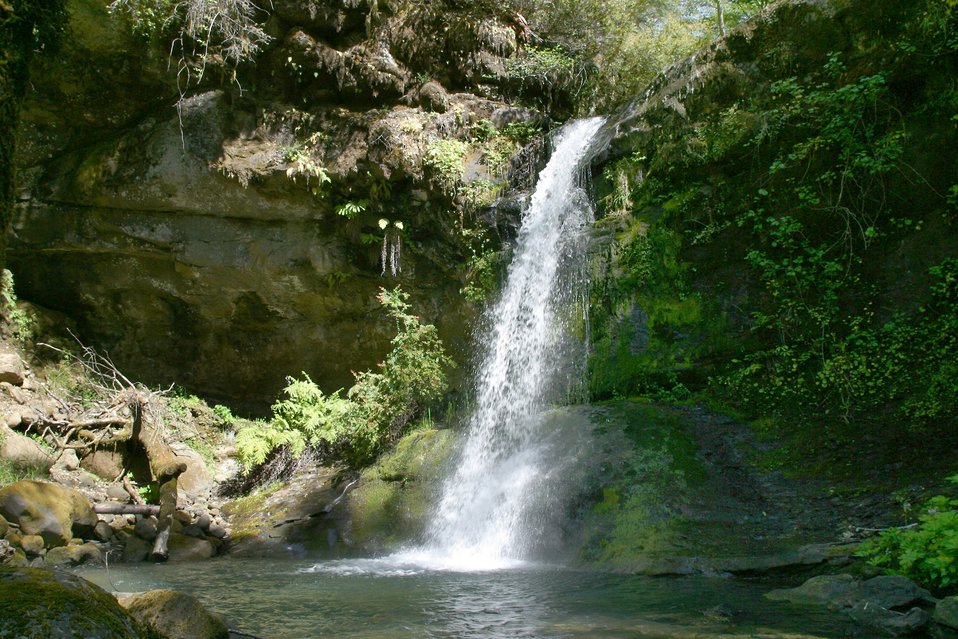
Wild section of the Rogue River from Grave Creek to Foster Bar May 19 to May 22.